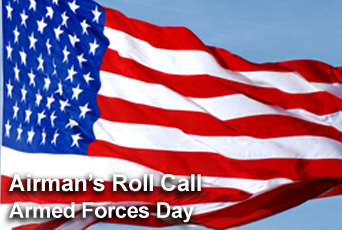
Armed Forces Day, a time for thanks

While Memorial Day pays tribute to those in uniform who have lost their lives and Veterans Day is to honor those who have served in the past, Armed Forces Day is a salute to service for the Airmen, Soldiers, Sailors, Marines and Coast Guardsmen of today.